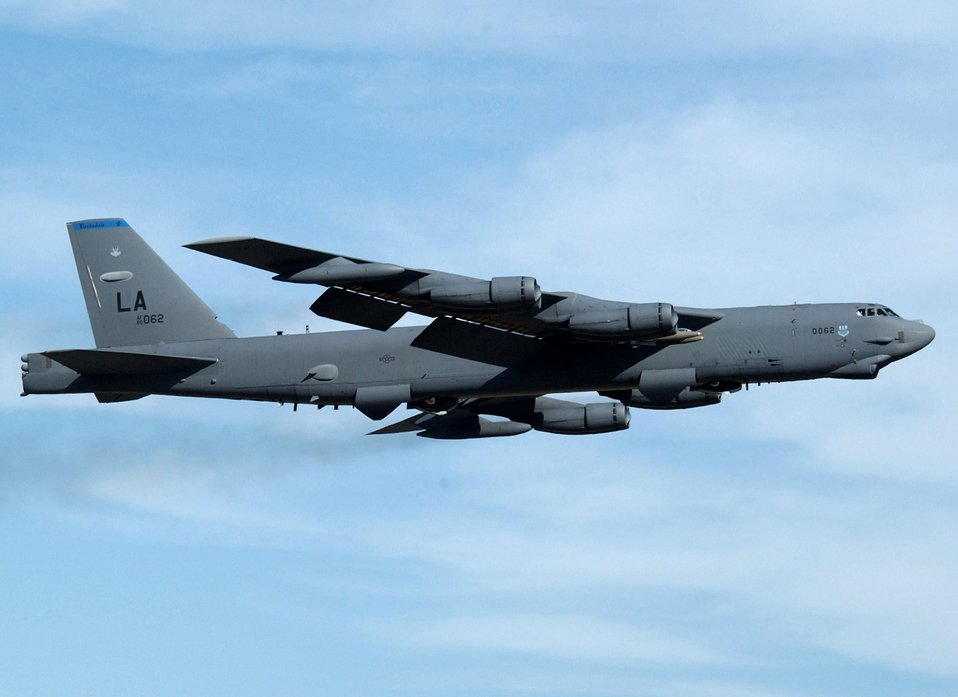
49th Test and Evaluation Squadron demos LITENING pod visual feed

An Air Force B-52 Stratofortress from Barksdale Air Force Base, La., was used for a demonstration of the LITENING pod Oct. 17 at Tyndall AFB, Fla. The demonstration showed the LITENING pod's capability to capture digital imagery and upload it to communications networks.